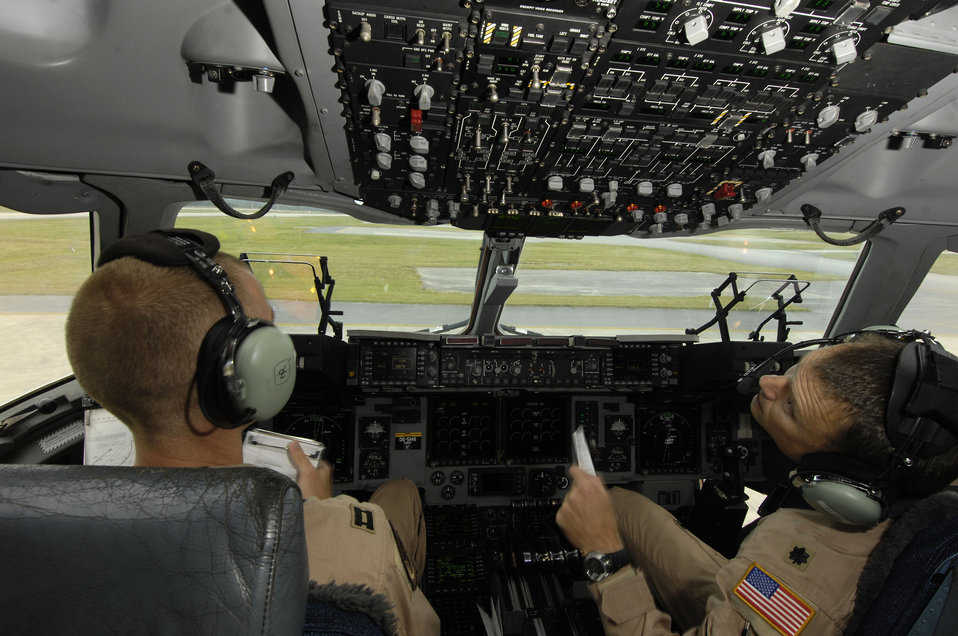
Hickam aircrew delivers vehicles to warfighters

Airmen prepare a C-17 Globemaster III to take off Dec. 29 at Kadena Air Base, Japan. The crew picked up a mine-resistant ambush-protected vehicle to be taken to Afghanistan.